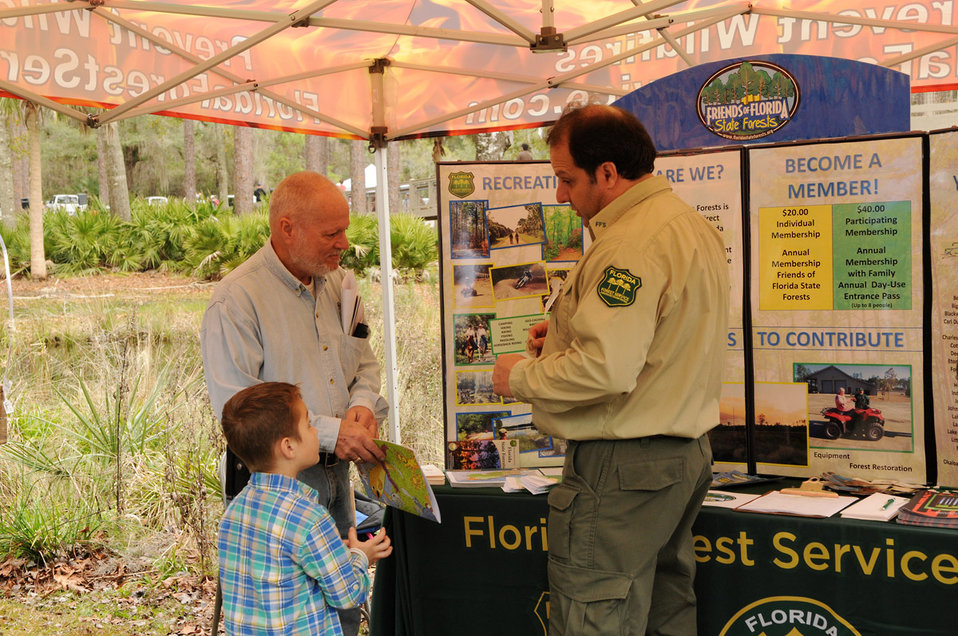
Florida Forest Service

St. Marks NWR 2014 WHO Festival. February 1, 2014.
A variety of exhibitors provided opportunities for festival goers to learn about ways to enjoy outdoor recreation.